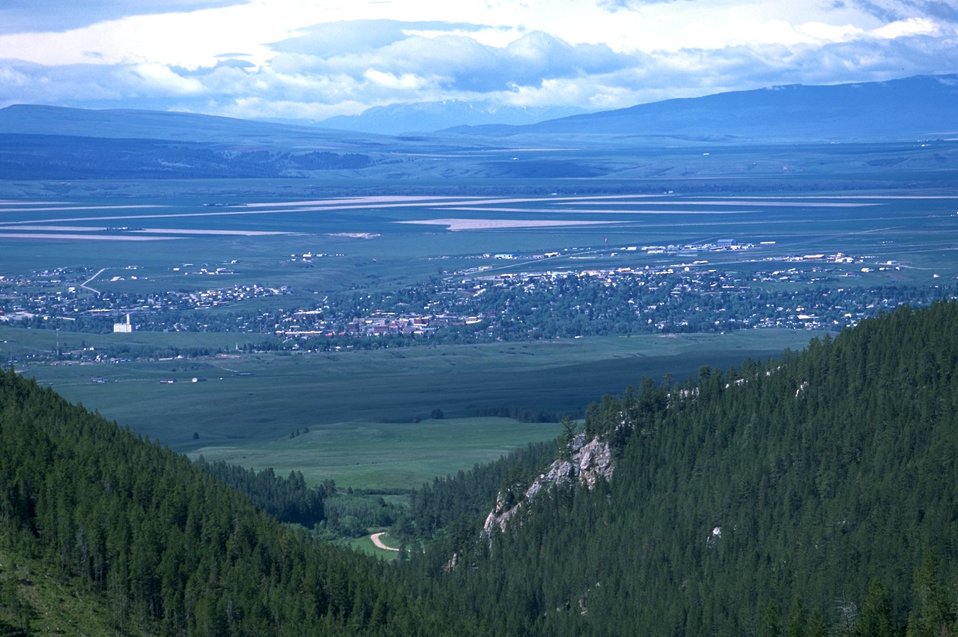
View of Lewistown MT from the Judith Mountains